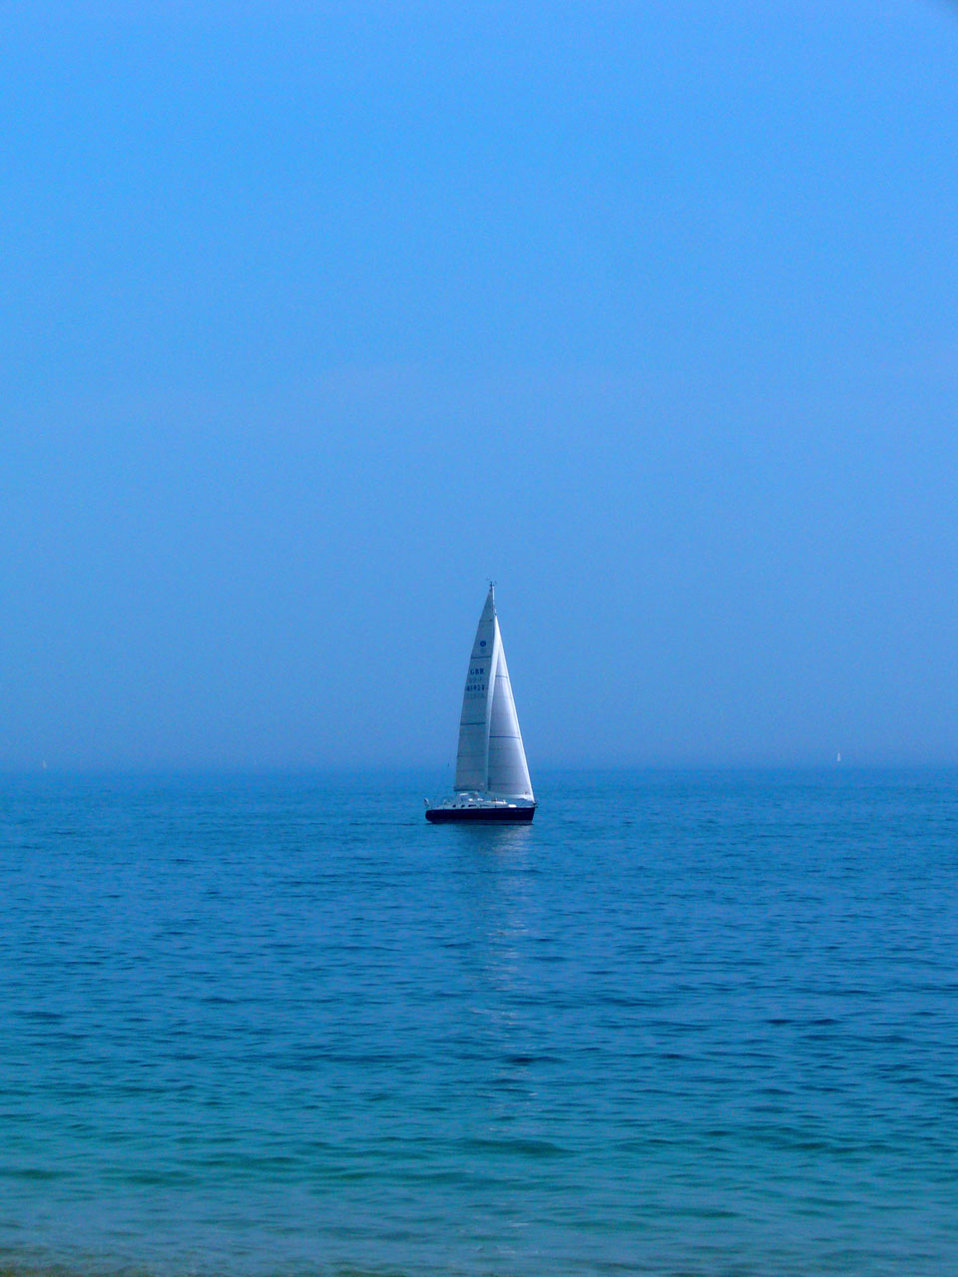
Boat on the sea.